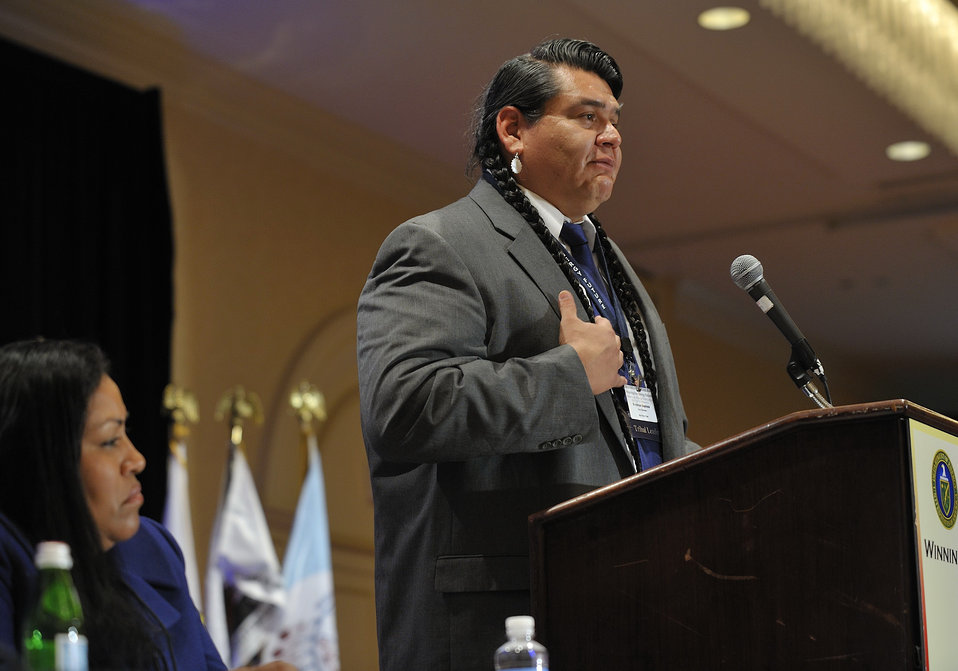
Tribal Energy Summit

Nez Perce Tribal Chairman Brooklyn Baptiste shares progress on capacity-building during Hanford clean-up and other issues.